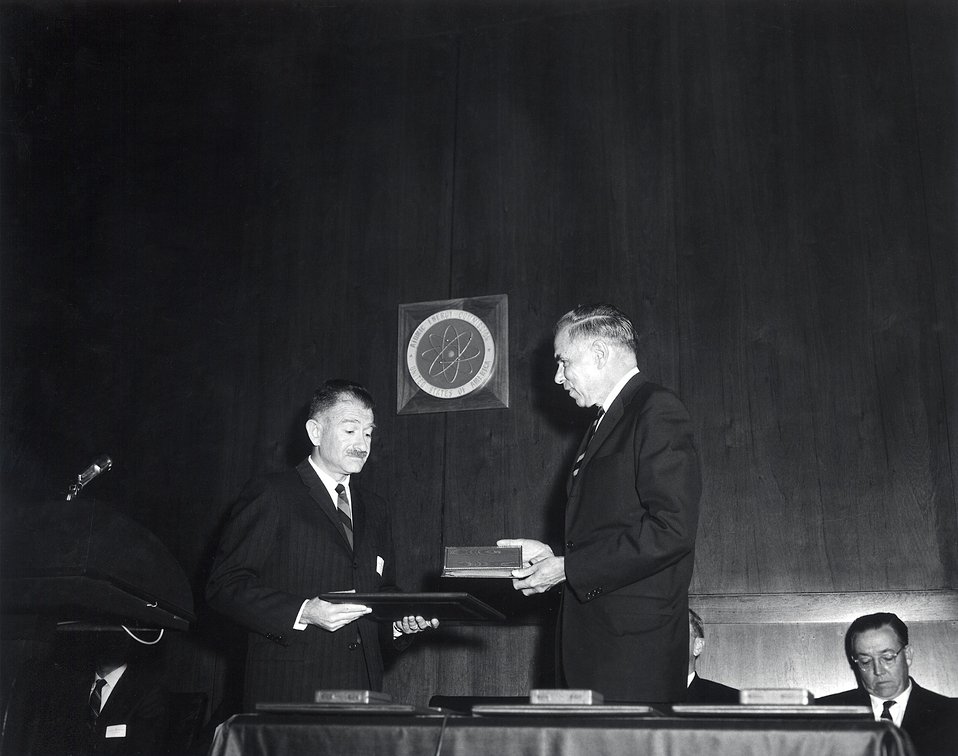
E.O. Lawrence Awards, 1967. Carnegie Institution Auditorium. L- Dr. Mortimer M. Elkind. R- Chairman Seaborg.